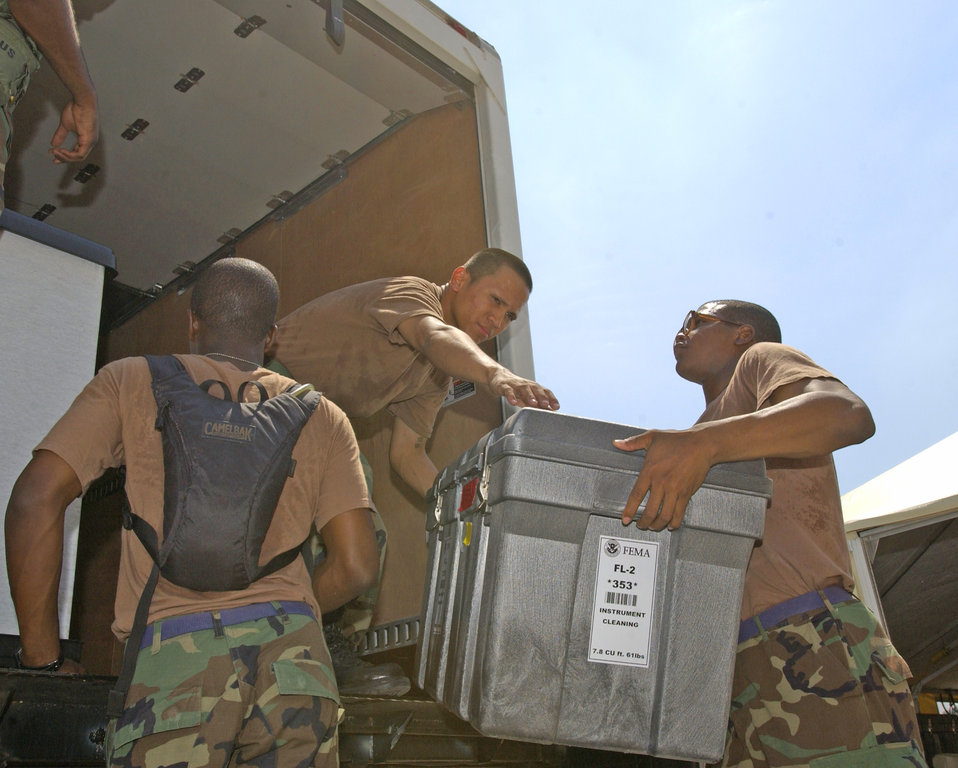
Lackland supports Hurricane Katrina evacuation

SAN ANTONIO -- Airmen Christian Bennett (top) and Xavier Denis (right) help unload Federal Emergency Management Agency equipment here. Airmen Bennett and Denis are with the 323rd Training Squadron at Lackland Air Force Base, Texas. Also pictured is Airman 1st Class Byron Davis, also with the 323rd TRS.